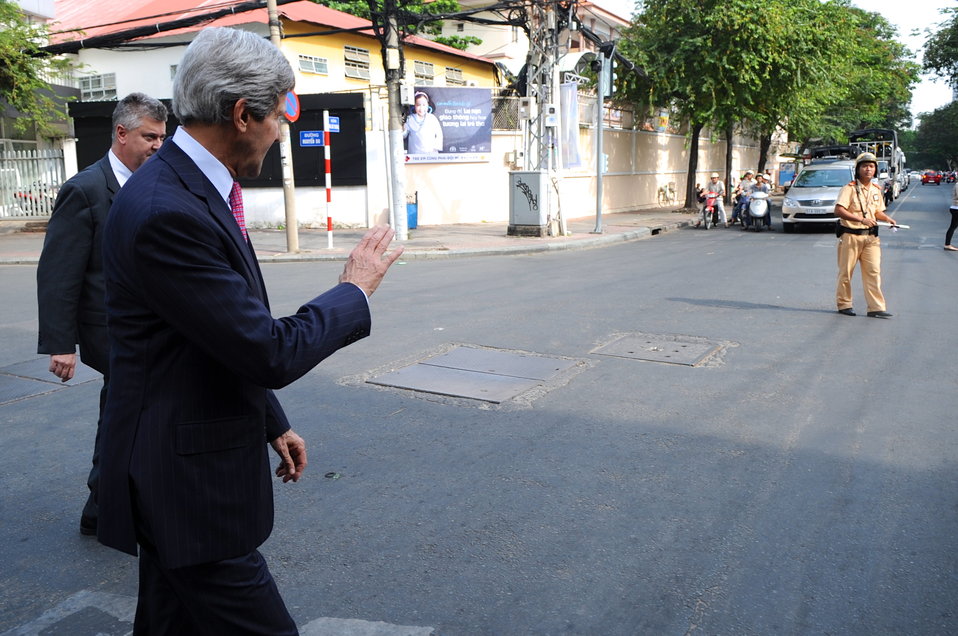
Secretary Kerry Waves to Vietnamese Policeman Walking Through Ho Chi Minh City

U.S. Secretary of State John Kerry waves to a police officer who held traffic as he crossed a street in Ho Chi Minh City, Vietnam, en route to Mass on December 14, 2013.